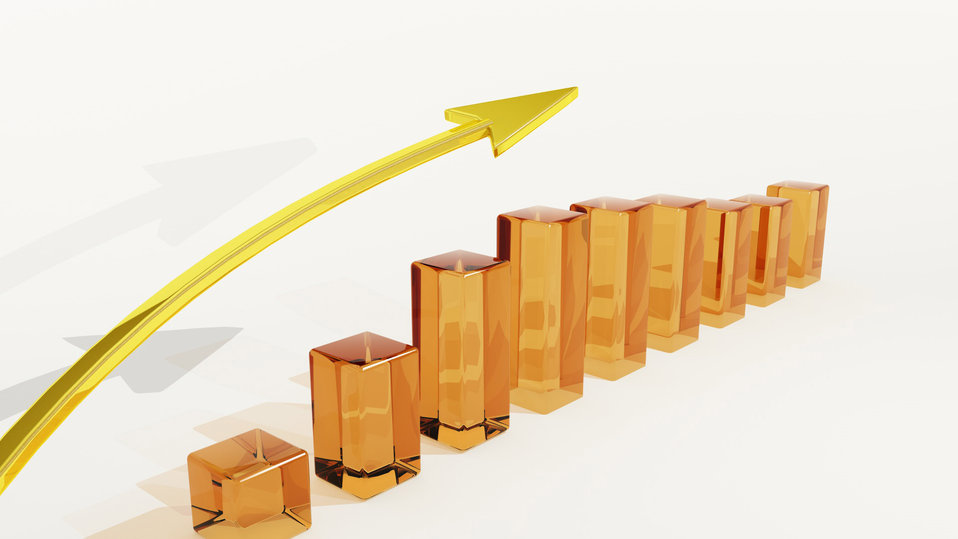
Business graph

Graph of growth or decline in business.